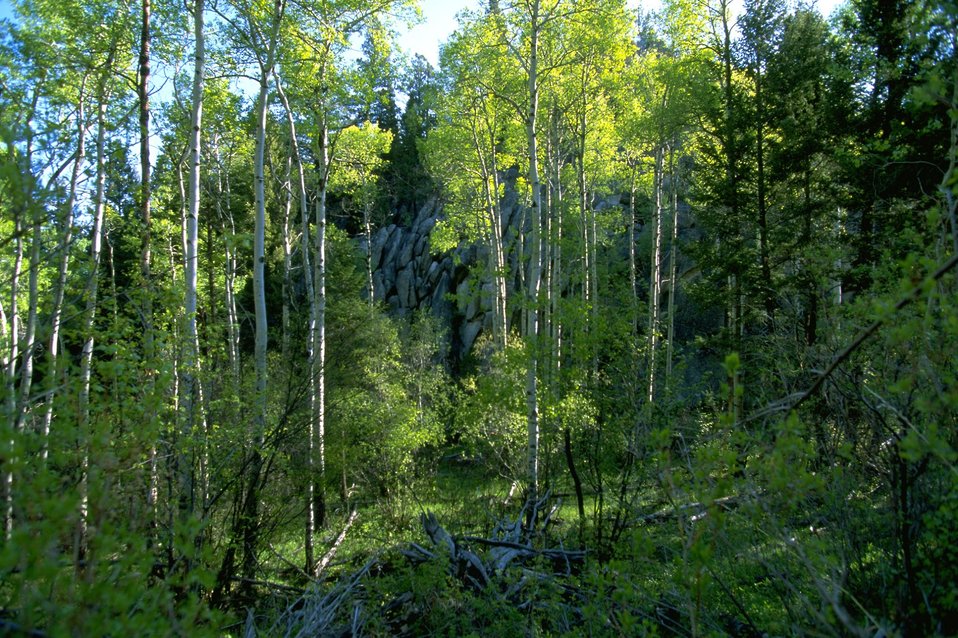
Forested area in the Humbug Spires Wilderness Study Area